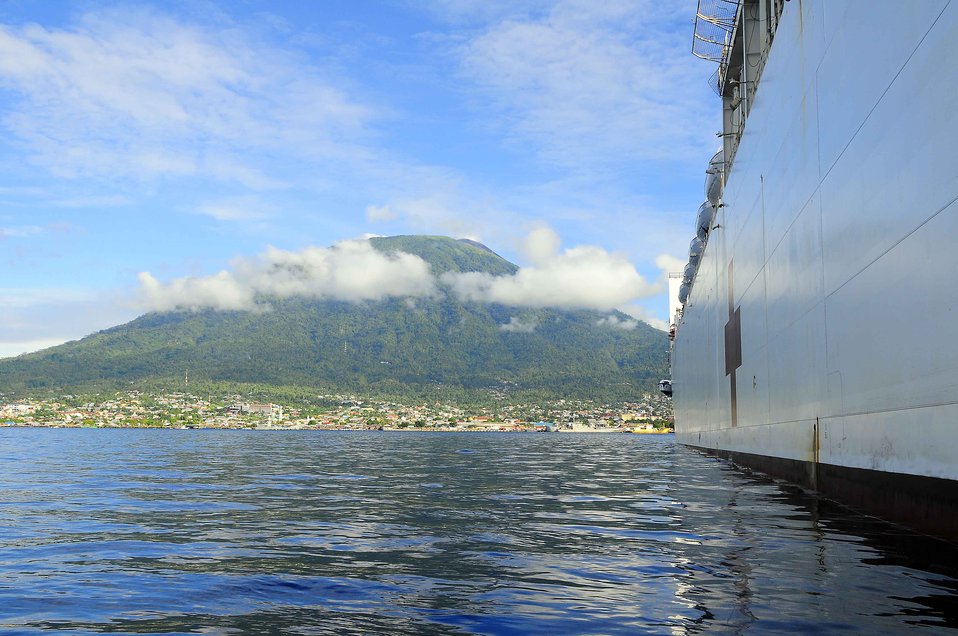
USNS Mercy Sits at Anchor Off the Coast of Ternate, Indonesia

The Military Sealift Command hospital ship USNS Mercy (T-AH 19) sits at anchor off the coast of Ternate, Indonesia, on July 20, 2010, as Pacific Partnership 2010 operations are ongoing in the area and throughout Indonesia. Pacific Partnership 2010 is the fifth in a series of annual U.S. Pacific Fleet endeavors conducted in Indonesia as a disaster relief exercise aimed at strengthening regional relationships with host and partner nations in Southeast Asia and Oceania.